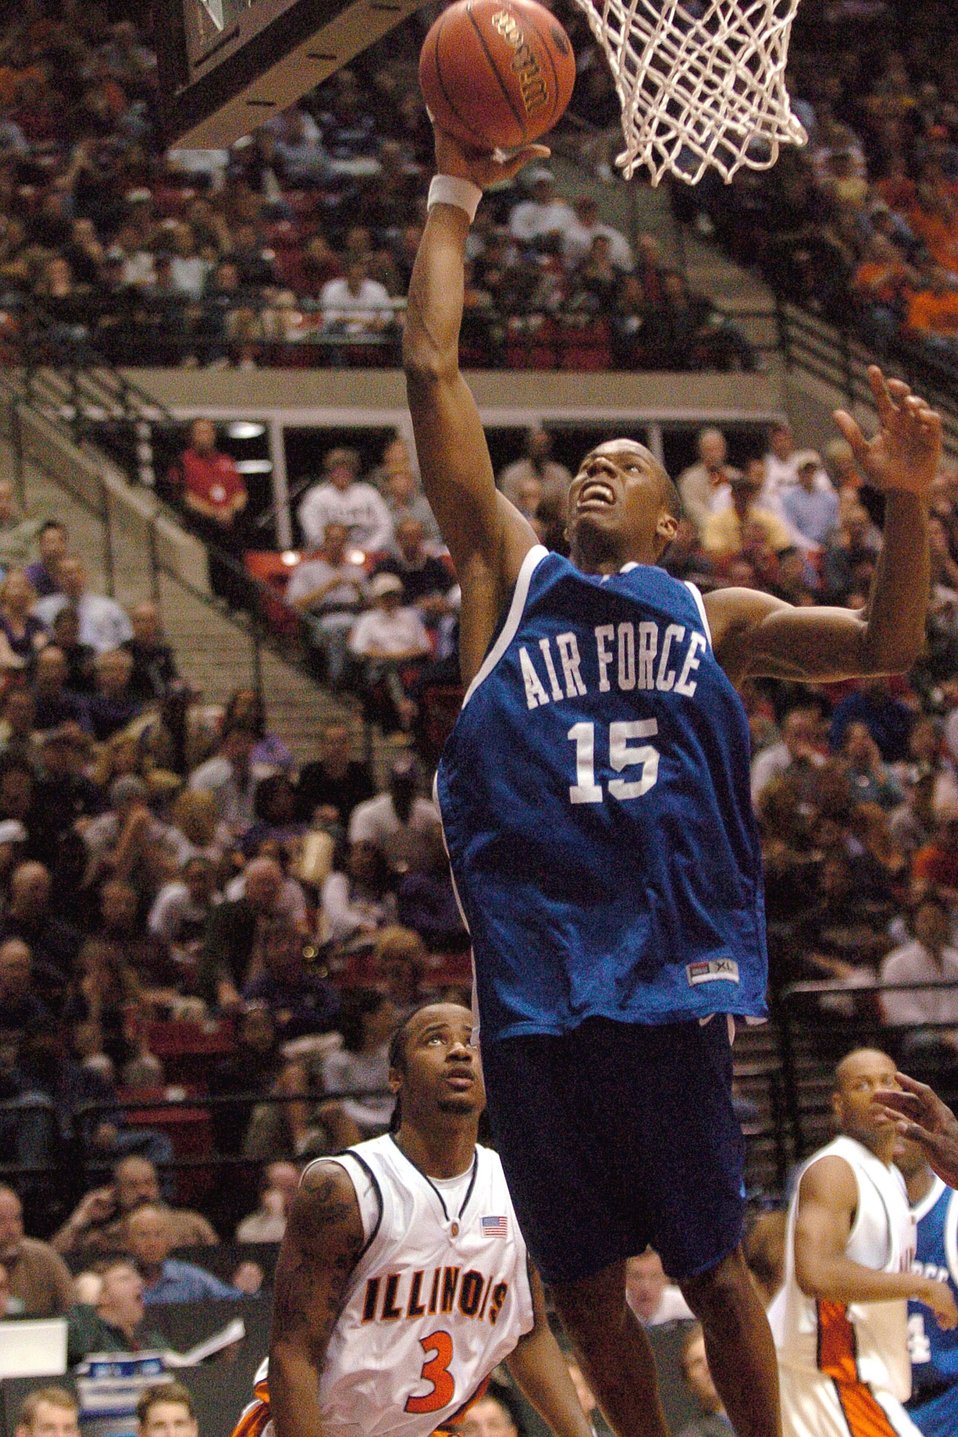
Illinois grounds Air Force

Falcon guard Antoine Hood goes strong to the basket above Illinois guard Chester Frazier, 3, during the NCAA Tournament game Thursday, March 16, 2006, at Cox Arena in San Diego.